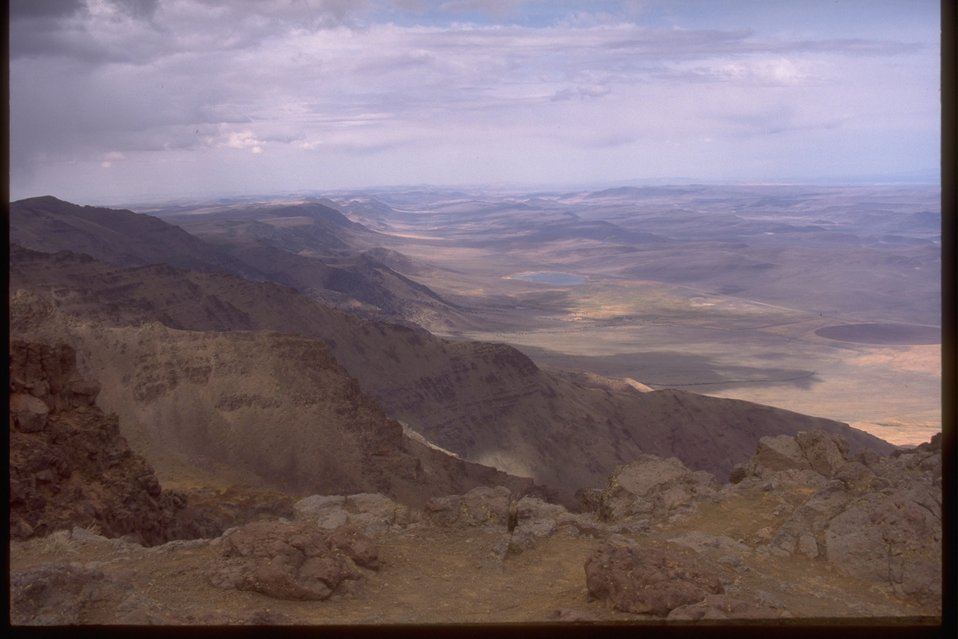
View north to Mana Lake from Steens summit.